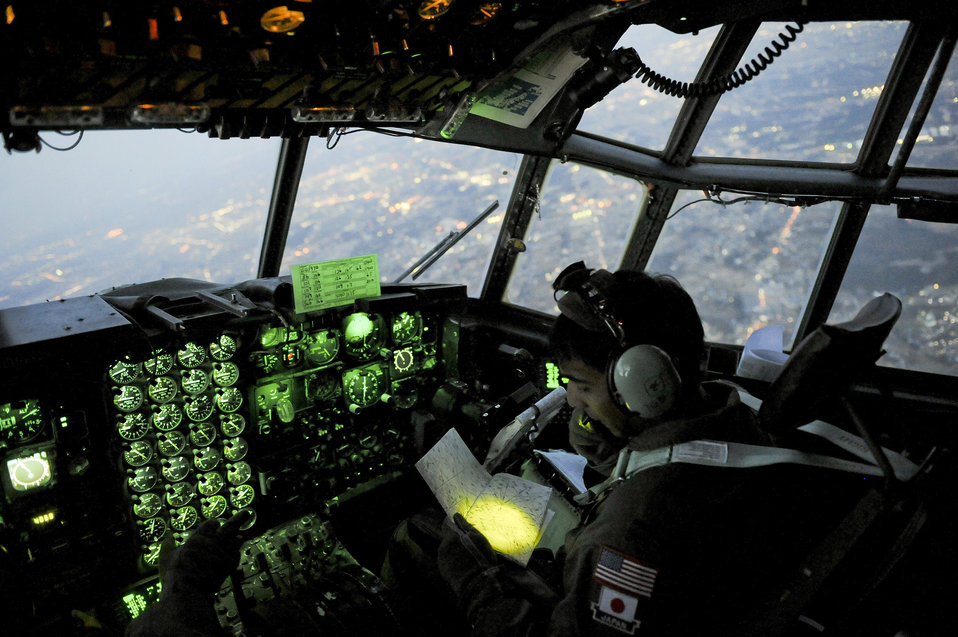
Medical supplies for Japan

Capt. Yuri Batten looks at a map while flying a C-130 Hercules filled with medical supplies March 19, 2011, over Yokota, Japan. Captain Batten is assigned to the 36th Airlift Squadron.